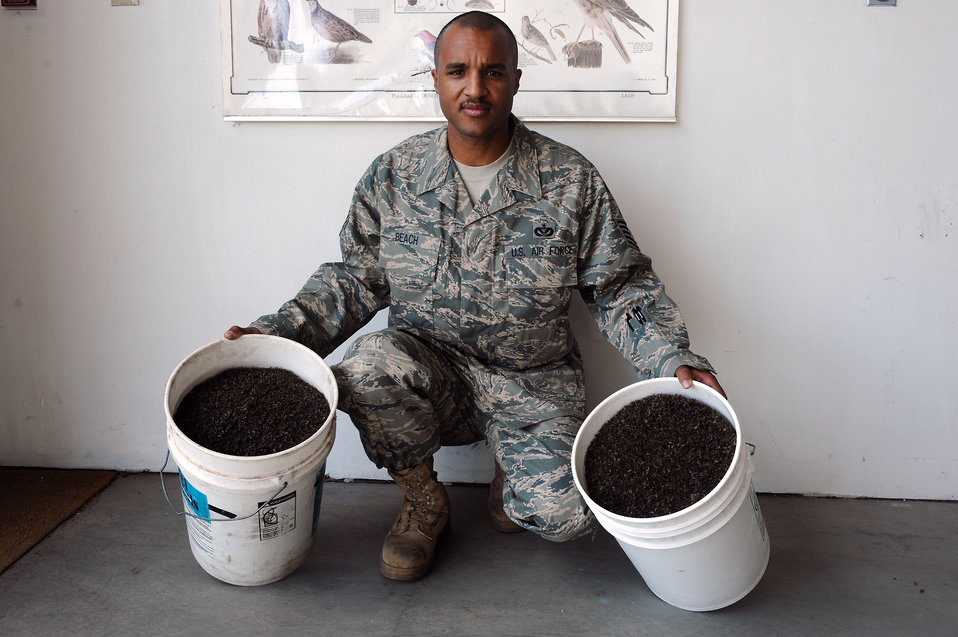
Eielson NCO bugs mosquitos

Tech. Sgt. Christopher Beach displays two buckets filled with mosquitoes used for educational purposes at local schools Aug. 14. Sergeant Beach has 20 strategically-placed mosquito magnets around the base to capture, identify, count and send mosquitoes to be tested for diseases. Last year, he caught more than 3 million mosquitoes. He is assigned to the 354th Civil Engineer Squadron entomology shop.